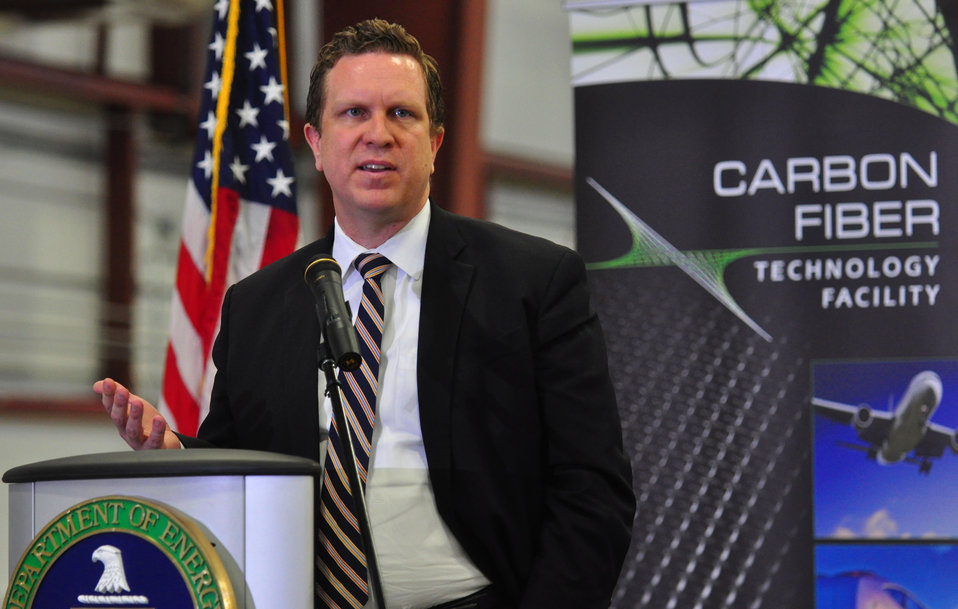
Carbon Fiber Technology Facilty Open House Oak Ridge Tennessee

13-025 DOE photo Lynn Freeny
Assistant Secretary for Energy Efficiency and Renewable Energy David Danielson